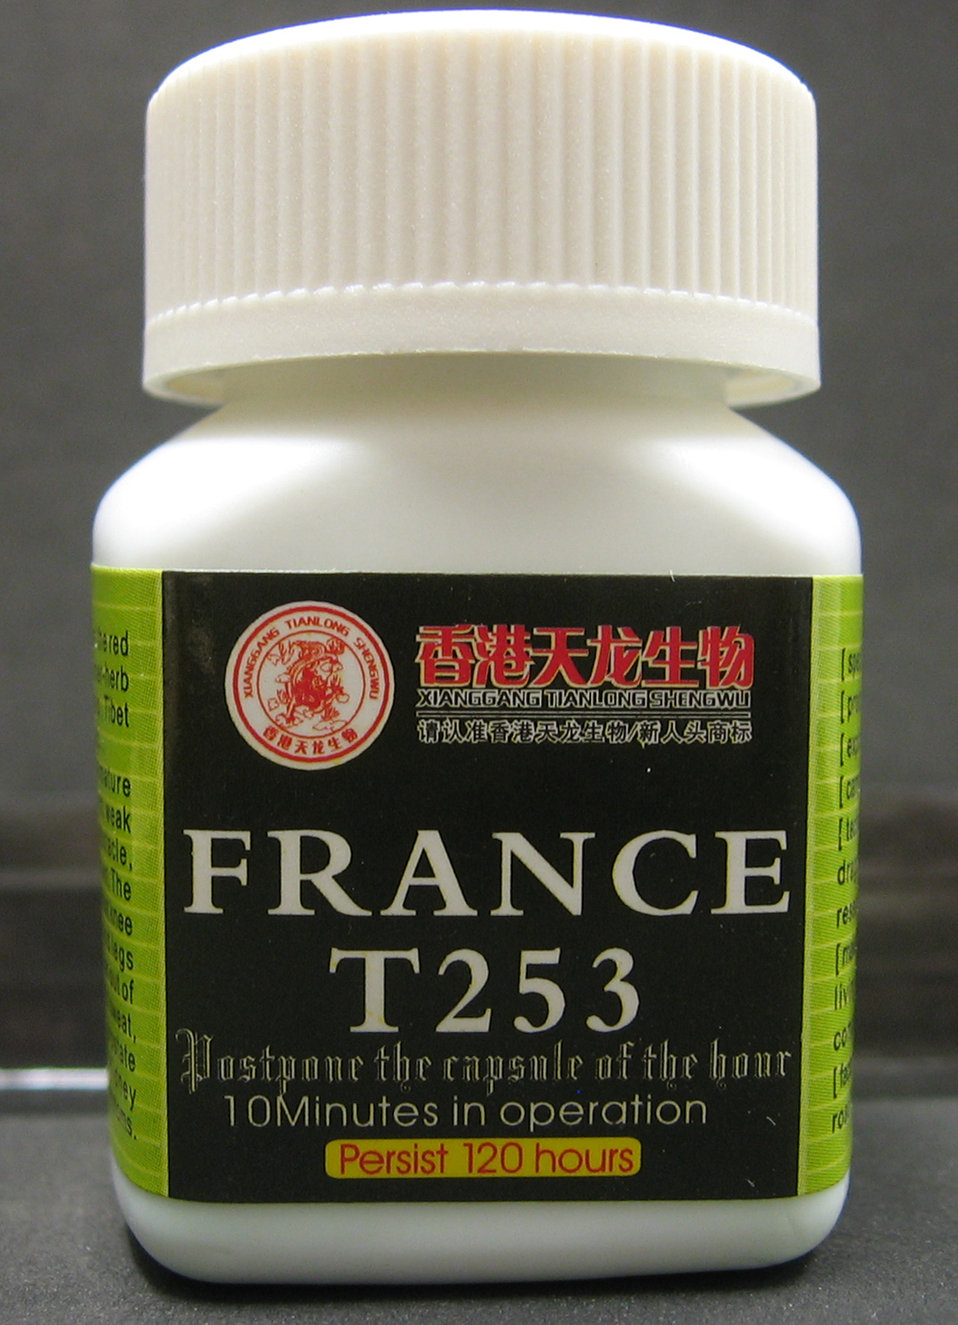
France T253

April 3, 2012 - The FDA is advising consumers not to purchase or use 'France T253,' a product promoted and sold for sexual enhancement. The product was found to contain undeclared sildenafil. For more information, go www.fda.gov/drugs/resourcesforyou/consumers/buyingusingme...

And read this Consumer Update: Beware of Fraudulent ‘Dietary Supplements’